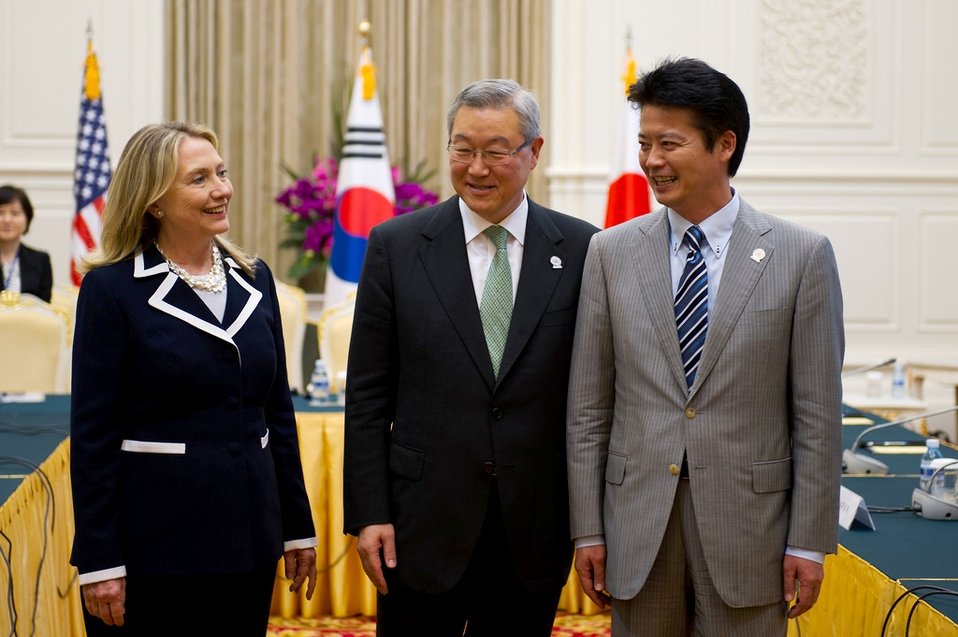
Secretary Clinton With Korean Foreign Minister Kim and Japanese Foreign Minister Gemba

U.S. Secretary of State Hillary Rodham Clinton meets with Korean Foreign Minister Kim Sung-hwan and Japanese Foreign Minister Koichiro Gemba in Phnom Penh, Cambodia, on July 12, 2012.